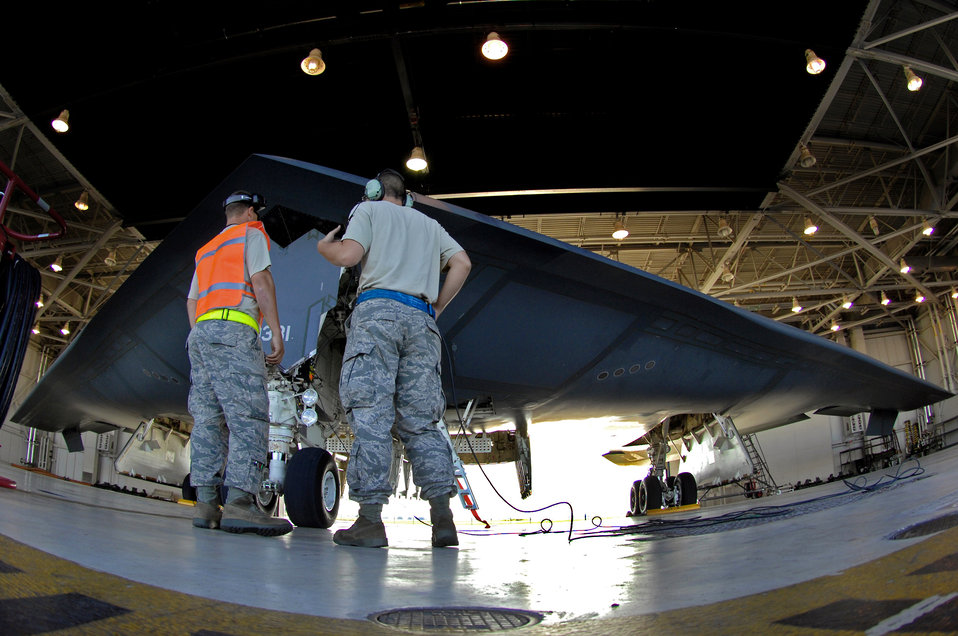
Ready for takeoff

Senior Airman Douglas Anthony and Airman Kyle Joyner, both 509th Aircraft Maintenance Squadron crew chiefs, discuss pre-flight checks on a B-2 Spirit before takeoff Aug. 22 at Whiteman Air Force Base, Mo.